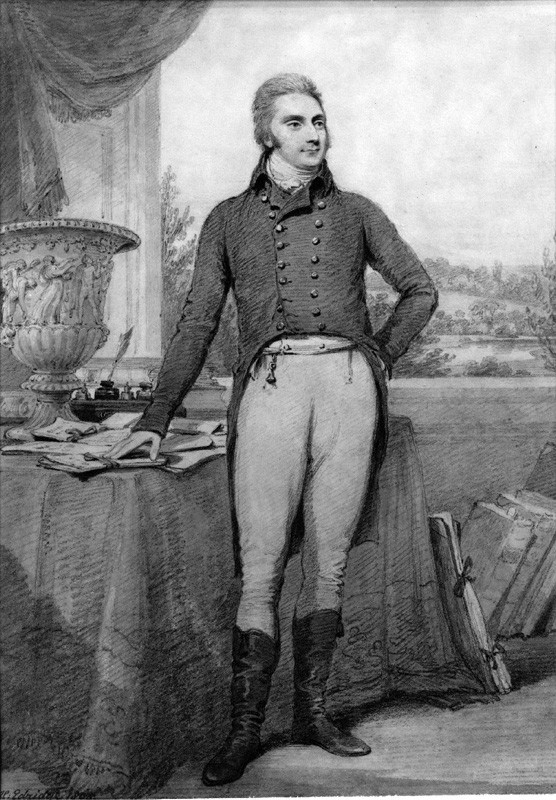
1stLordFarnborough